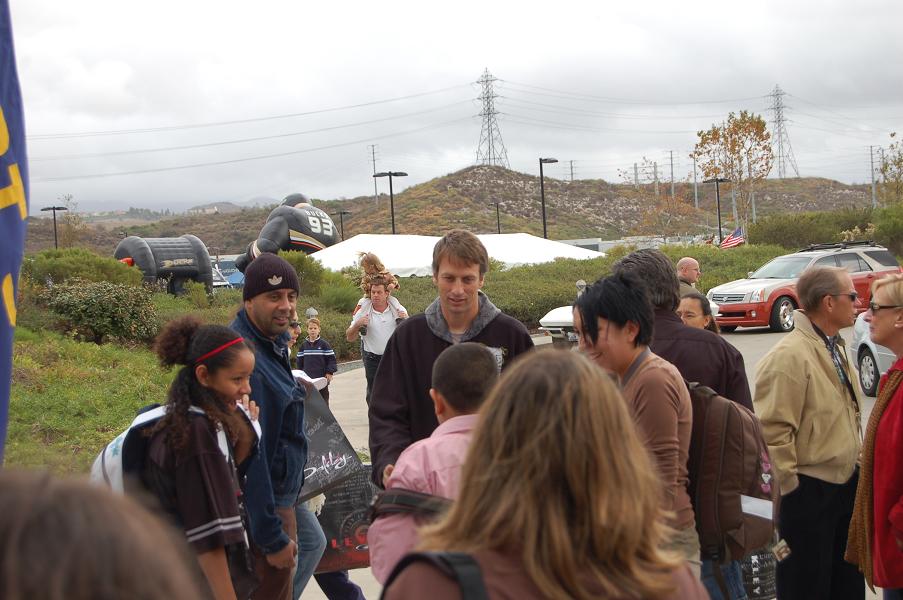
Pro skateboarder

Professional Skateboarder Tony Hawk chats with children during the Oakley Party Dec. 16. . The party took place during the second day of the four-day Snowball Express event. The Snowball Express final two day will include a trip to Disneyland and tickets to an Anaheim Ducks game.